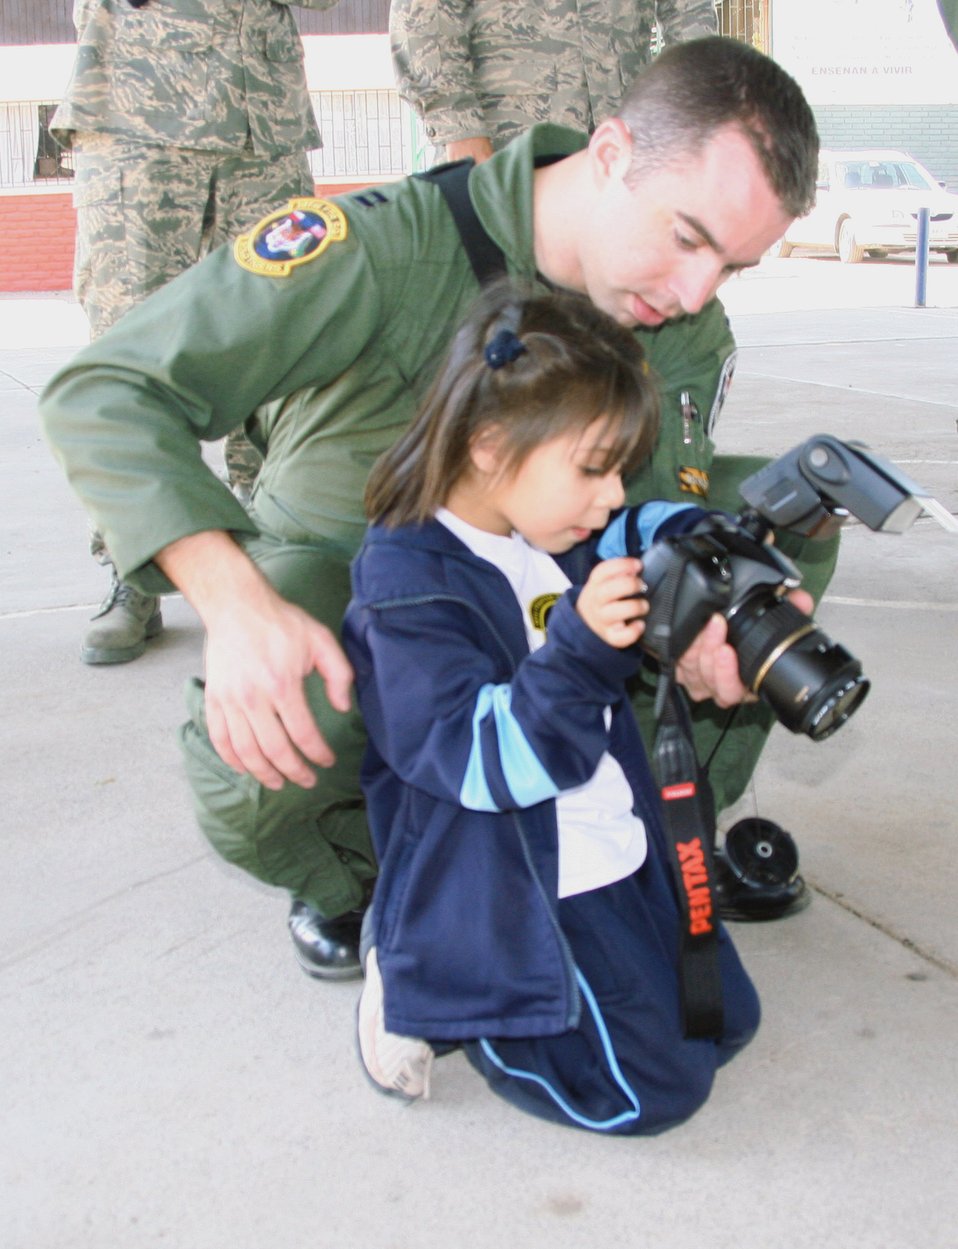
Airmen visit Chilean orphanage

Capt. John Peltier teaches a Chilean orphan how to take pictures at Koinomadelfia Orphanage April 3 west of Santiago, Chile. Twenty Airmen participating in the FIDAE air show took a break from aircraft displays and demonstrations to visit more than 30 preschool-aged children at the orphanage to hand out toys, patches and stickers. Koinomadelfia is home to 80 children who have been rescued from domestic violence situations. The FIDAE air show hosts aircraft from 42 countries and is the largest event of its kind in South America. Captain Peltier is assigned to the 391st Fighter Squadron from Mountain Home Air Force Base, Idaho.